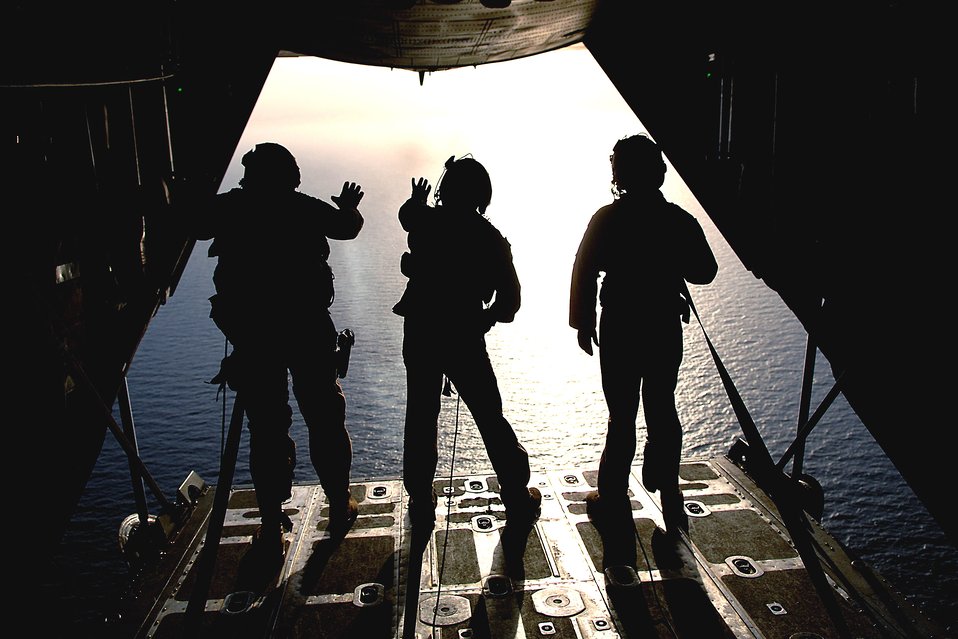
Djibouti Mission

Three HC-130 Hercules loadmasters watch a smoke grenade June 3 from the back ramp of the aircraft during a mission off the coast of Djibouti. The Airmen are deployed to Combined Joint Task Force-Horn of Africa out of Camp Lemonier, Djibouti. The loadmasters are from the 71st Search and Rescue Squadron at Moody Air Force Base, Ga.